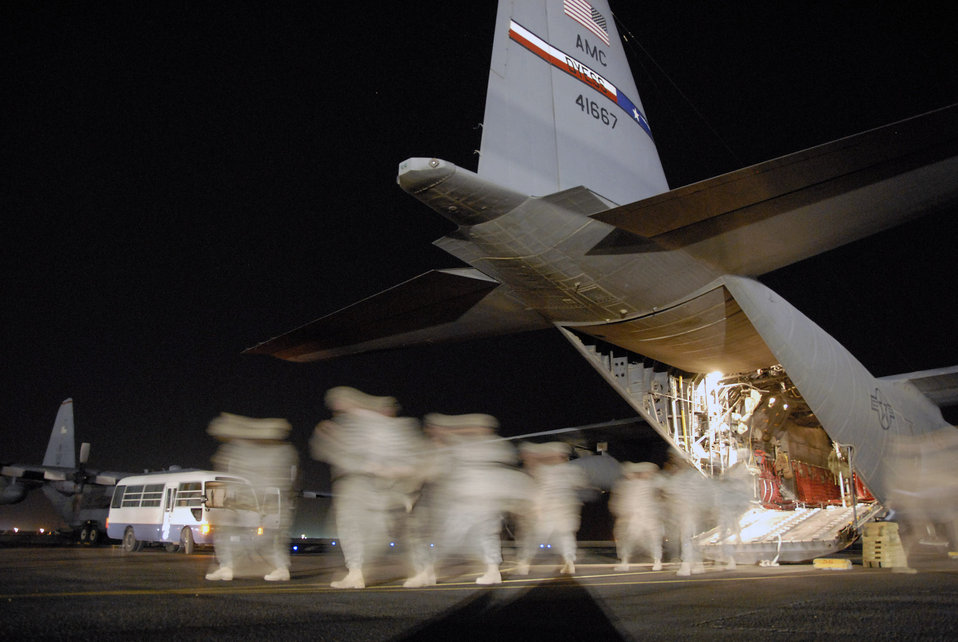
Special delivery

Soldiers returning home from a 14-month deployment in Iraq step-off of a C-130 Hercules May 13 at a Southwest Asian air base. The Soldiers are deployed from the A Battery, 1-10 Field Artillery, 3rd Brigade Combat Team, 31st Division out of Fort Benning, Ga.